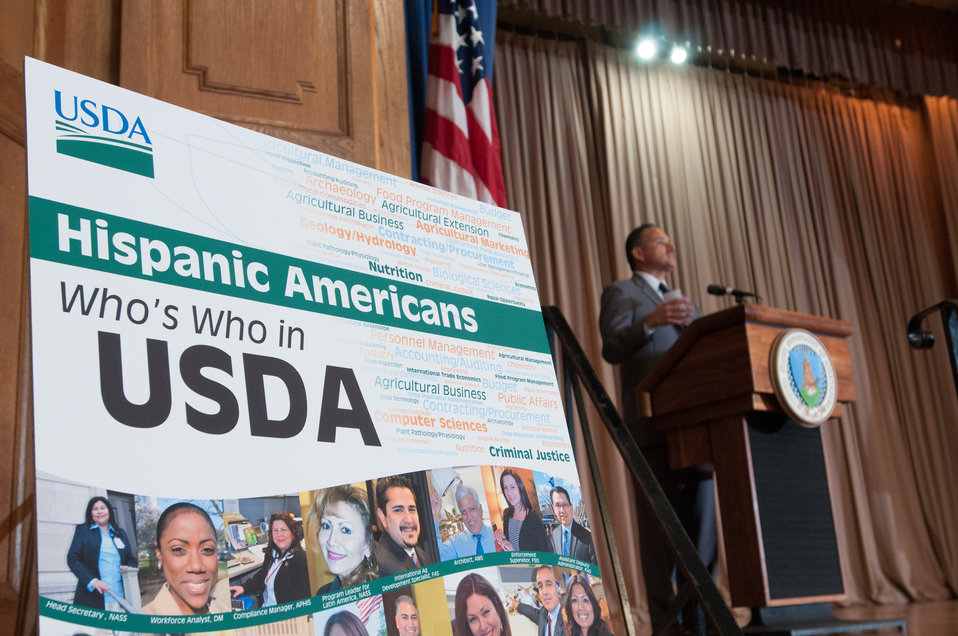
U.S. Department of Agriculture (USDA) Office of the Secretary, Deputy Chief of Staff Oscar Gonzales, Jr. made remarks on behalf of Secretary Thomas J. Vilsack, during the 2013 National Hispanic Heritage Month ”Hispanics: Serving and Leading our Nation with Pride and Honor,” on Thursday, Sept. 19, 2013, in the Jefferson Auditorium, USDA Headquarters, Washington, D.C.